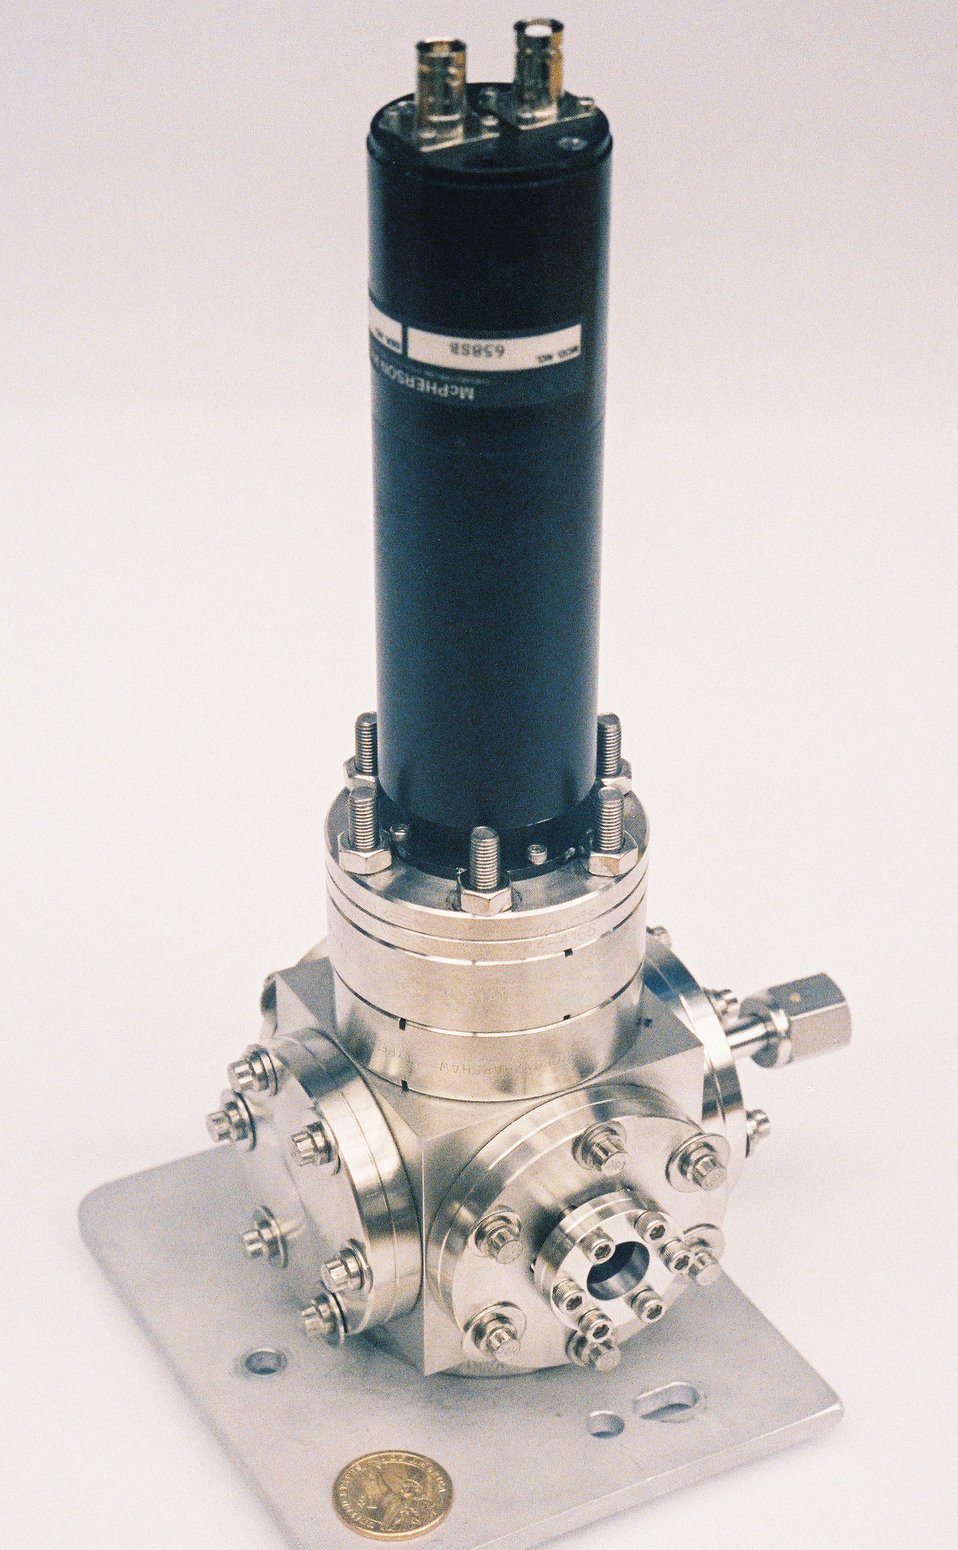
Neutron Detector

NIST Lyman alpha neutron detector (LAND), shown with a U.S. dollar coin for scale, is now the worlds most sensitive neutron detector.